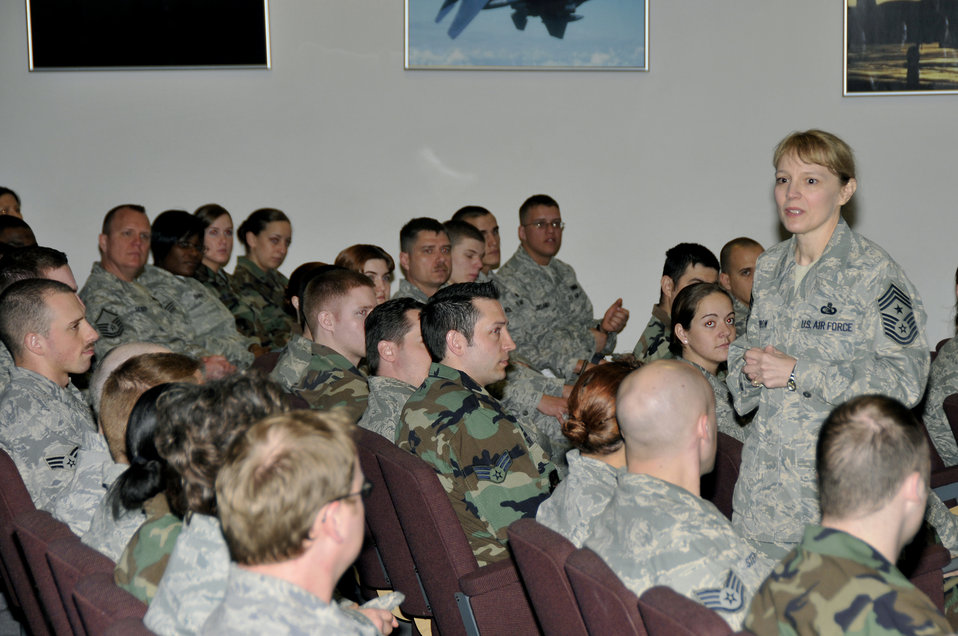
Command chief discusses Women's History Month

Chief Master Sgt. Pamela Derrow responds to Airmen's questions and concerns March 25 at Royal Air Force Lakenheath, England. Chief Derrow visited RAF Lakenheath as a guest speaker for the Women's History Month luncheon and visited various units. Chief Derrow is the U.S. Air Forces in Europe command chief.